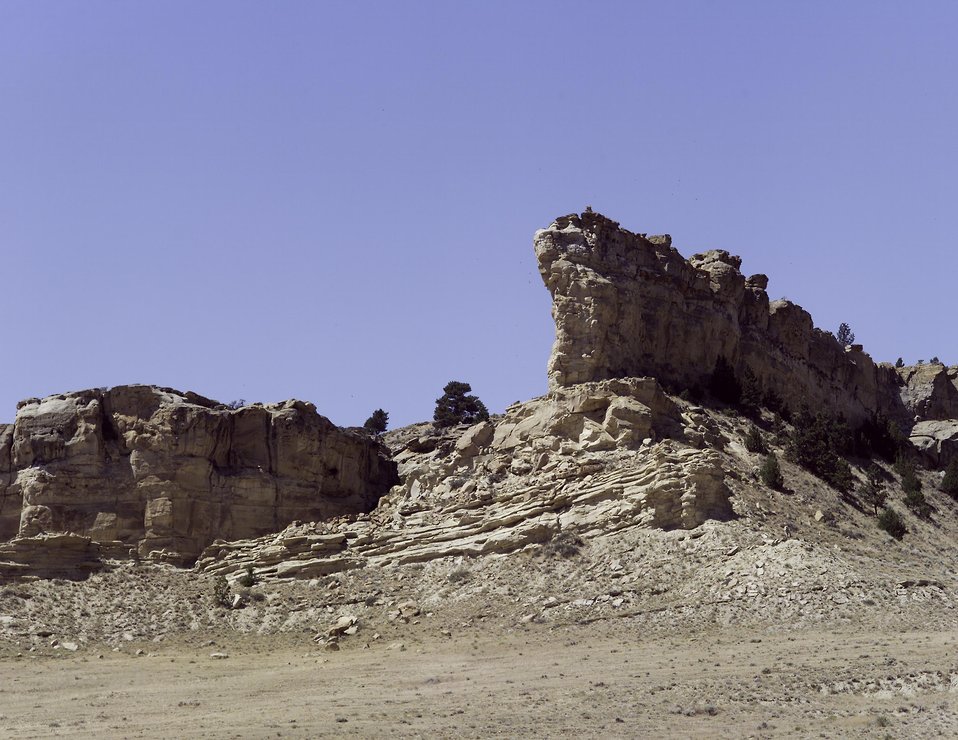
Hills surround Naval Petroleum Reserve No.3 (NPR-3) near Casper, Wyoming.

The Rocky Mountain Oilfield Testing Center (RMOTC) is a Department of Energy field test site for emerging and developing technologies to address critical energy issues. The field test site, located on Naval Petroleum Reserve No.3 (NPR-3), is a 10,000-acre site. There are approximately 700 well bores with 600 producing wells ranging in depth from 500 to 5,000 feet.